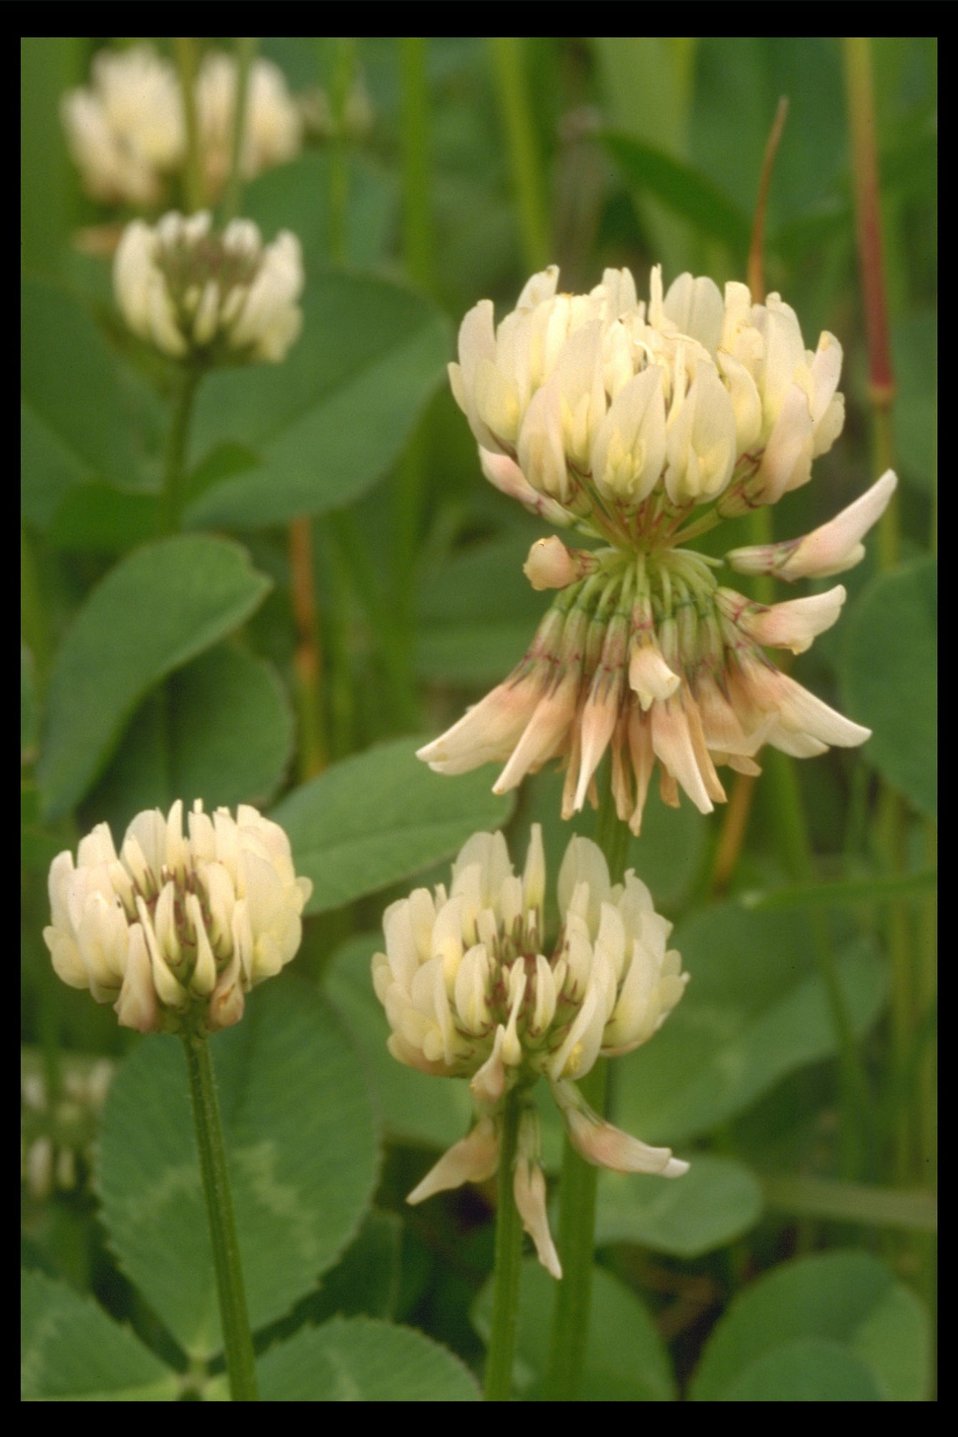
White Clover (Trifolium repens) along West Fork Evans Creek.